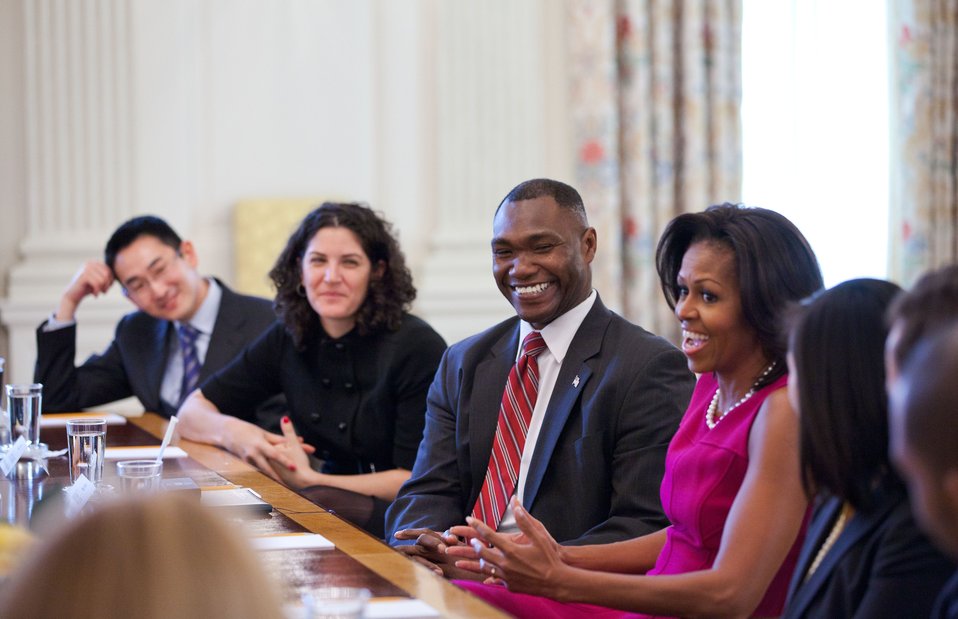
Airman making difference in Office of First Lady

Lt. Col. Rodney Lewis joins other White House Fellows in a meeting with First Lady Michelle Obama Jan. 25, 2012, in the State Dining Room of the White House. Lewis' primary mission is to help further Obama's and Jill Biden's Joining Forces program, which is a national initiative that mobilizes all sectors of society to give service members and their families support.